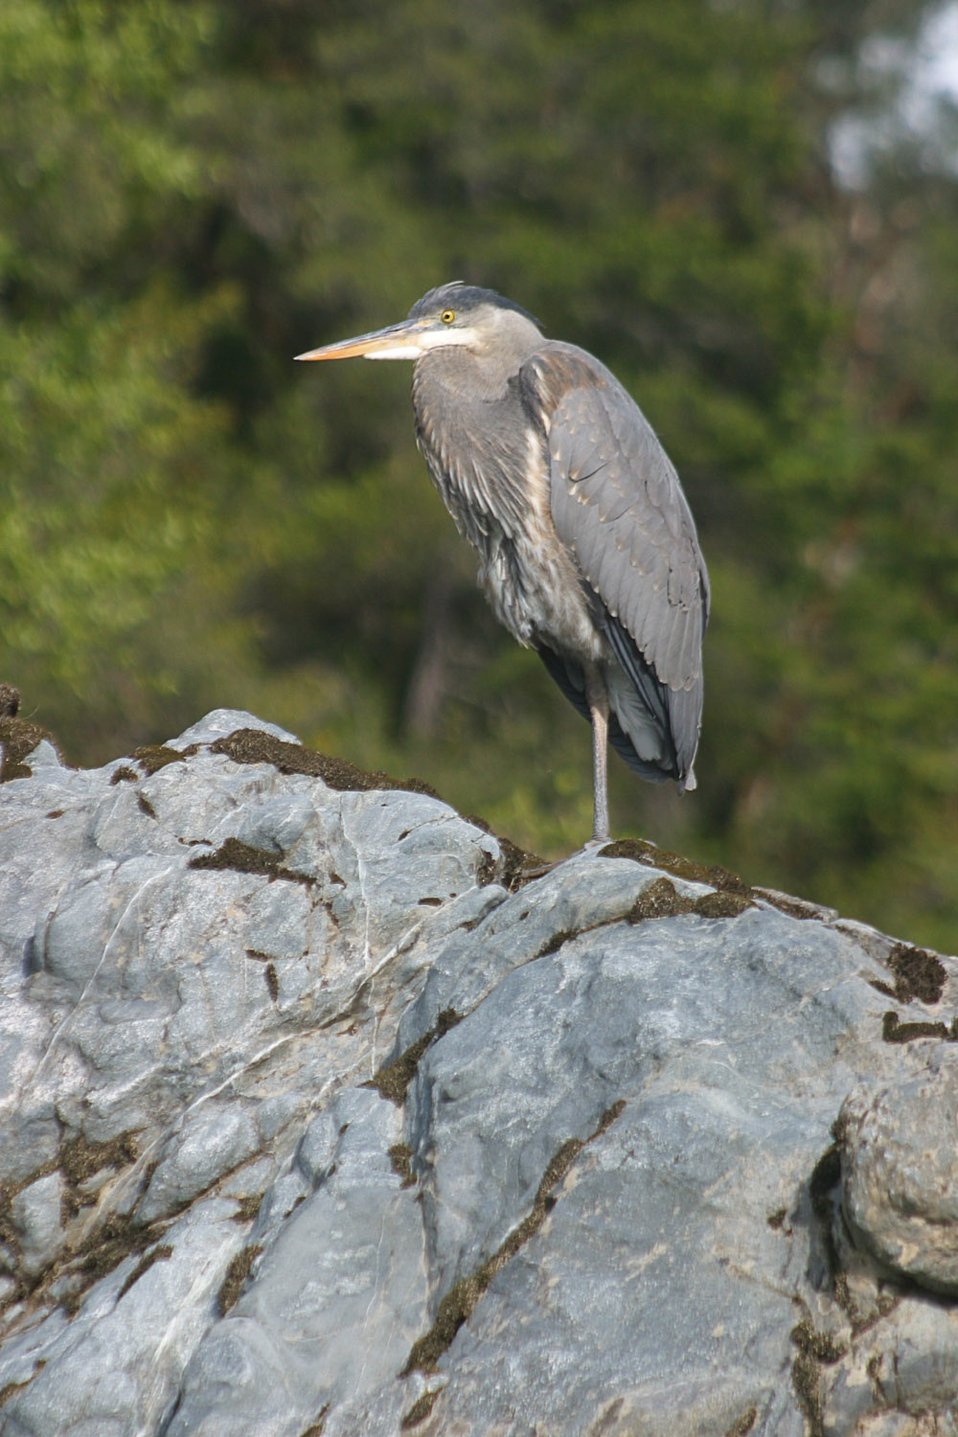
Great Blue Heron on the Wild section of the Rogue River from Grave Creek to Foster Bar. 3100 cfs at Grants Pass and 5300 at Agness.